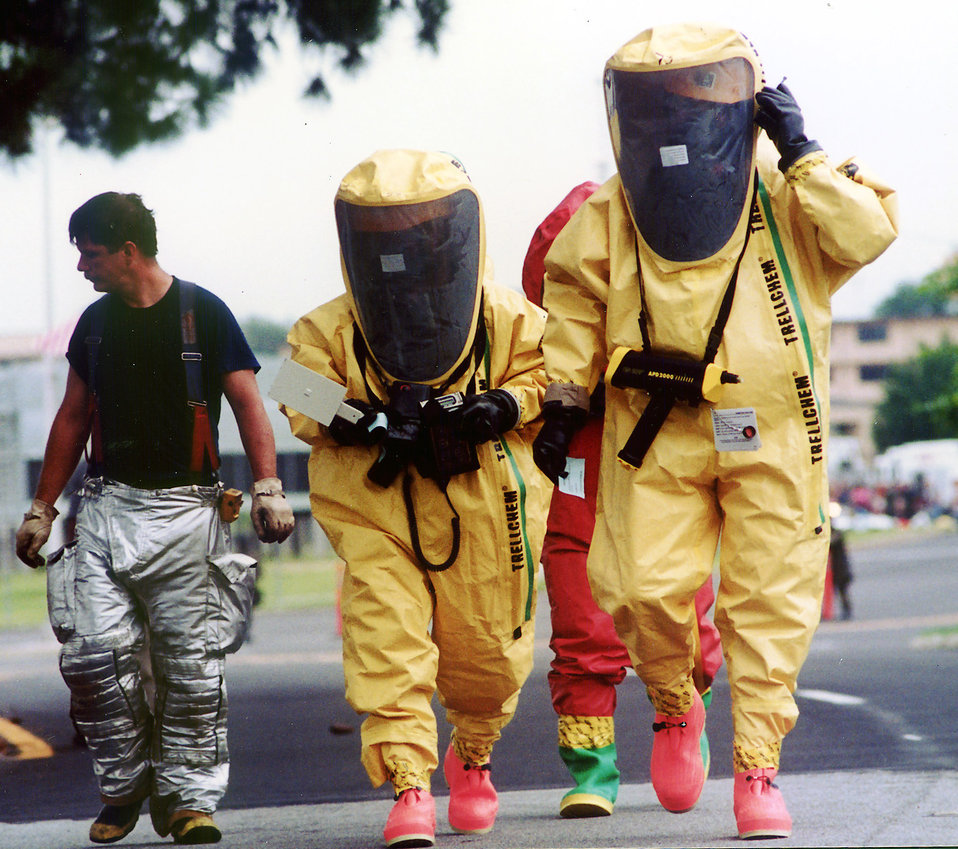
Send in the suits

ROBINS AIR FORCE BASE, Ga. -- Firefighters wear decontamination suits to assess the situation during a mass-casualty exercise here June 18. Base airmen joined local and federal emergency agencies for the exercise.